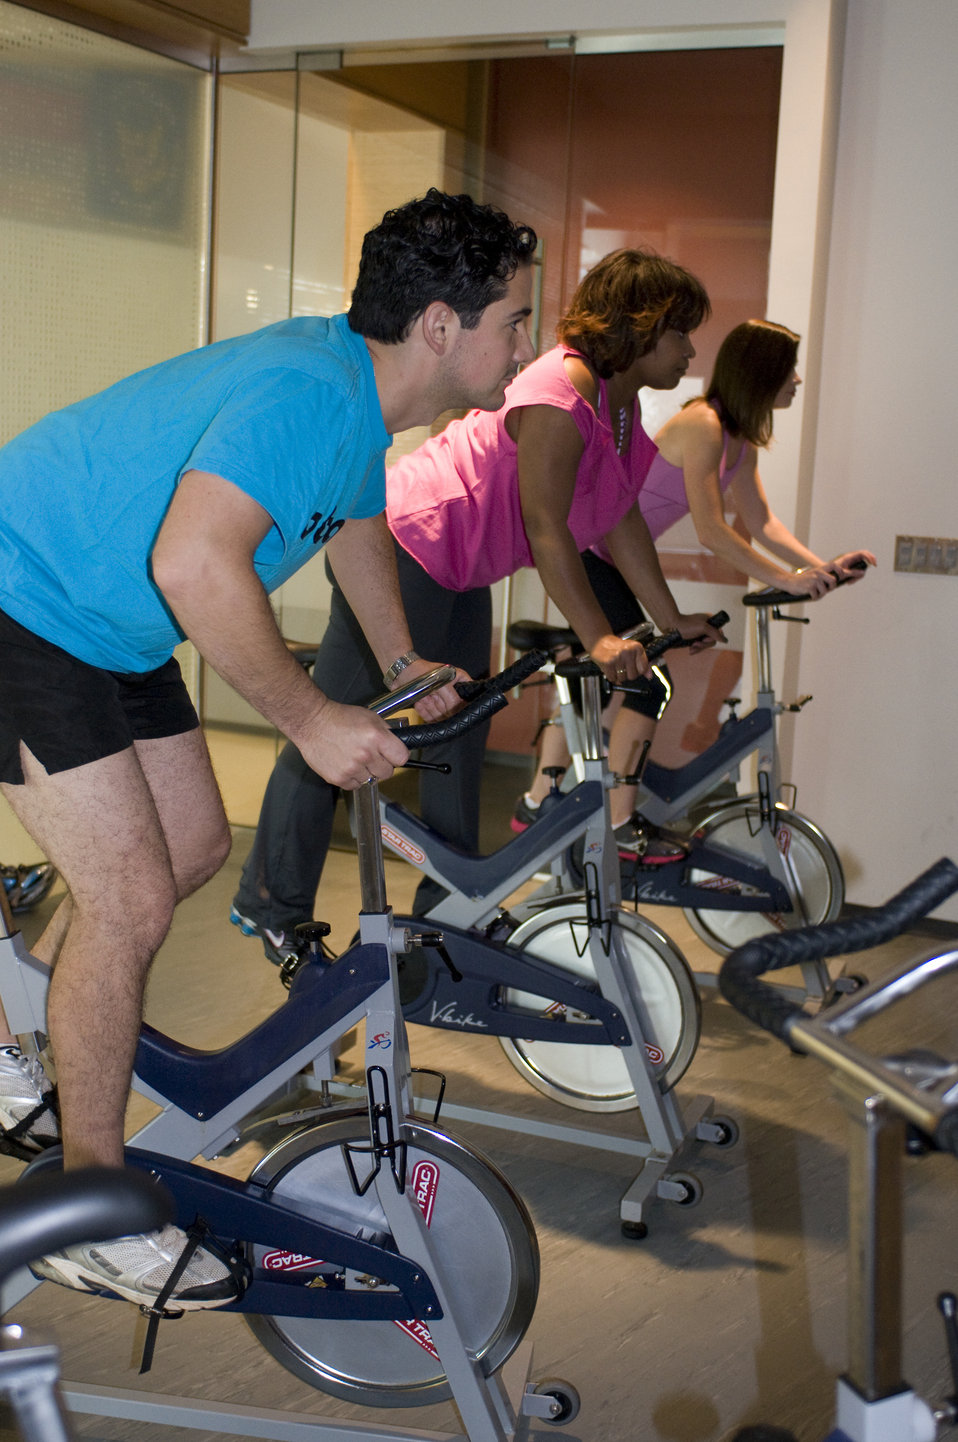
This image depicts a class in session, the purpose of which was to instruct a number of Centers for Disease Control (CDC) employees through an aerobic spinning session, consisting of attendees following the participatory commands of an instructor on whom they were focus to the right, though unseen here in this photograph.